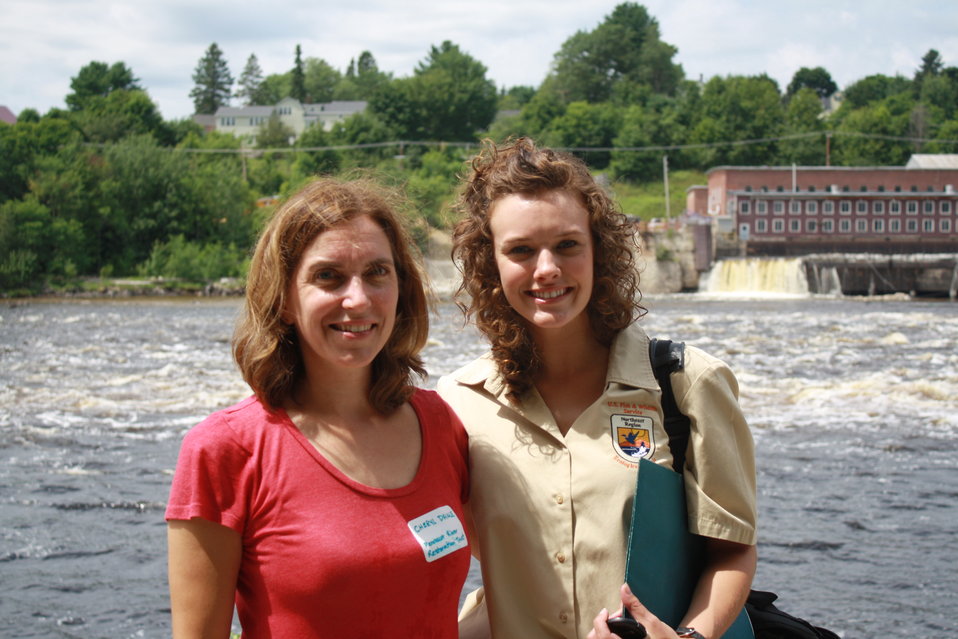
Veazie Dam Removal

Cheryl Daigle of the Penobscot River Restoration Trust and Meagan Racey of the U.S. Fish and Wildlife Service in front of Veazie Dam.